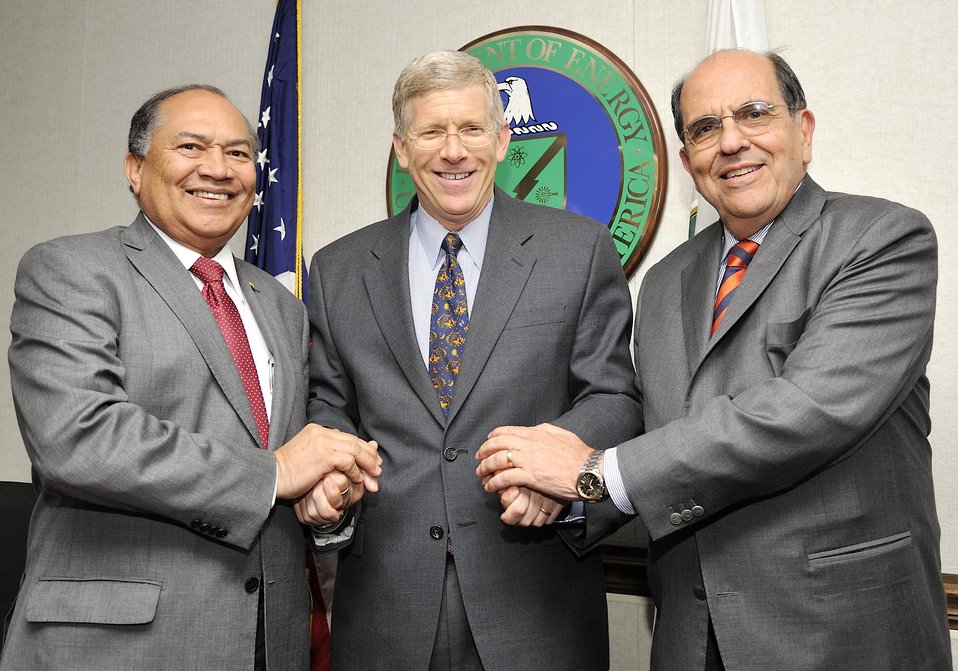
U.S. Deputy Secretary of Energy Daniel Poneman, Colombia's Minister of Energy and Mines Amylkar Acosta, Mayor of Santiago de Calí Rodrigo Guerrero.